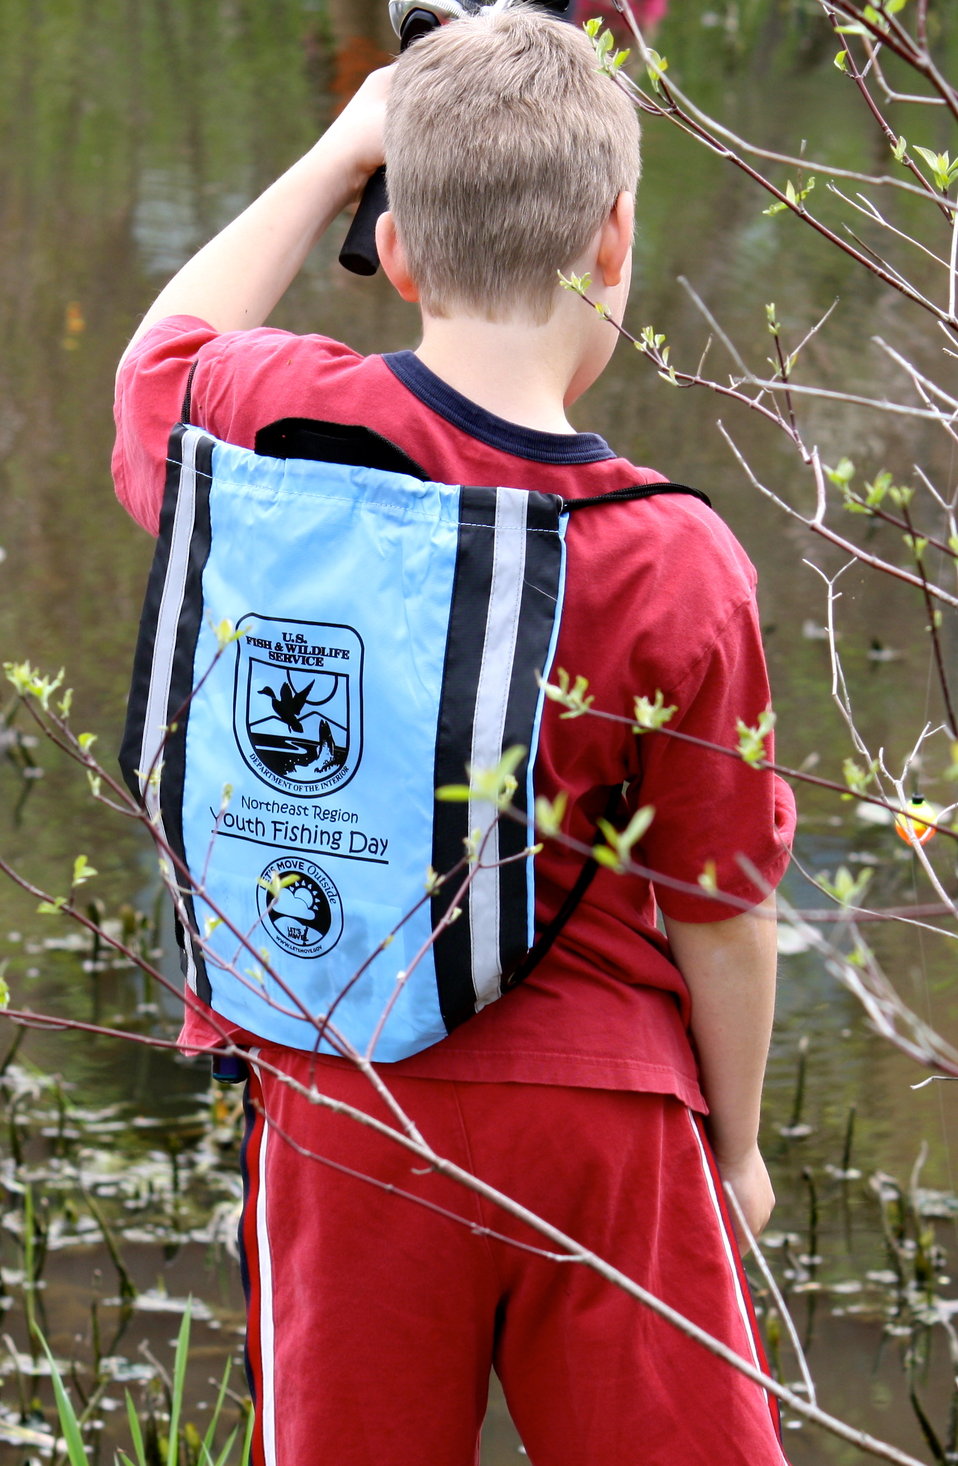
Boy Fishing

Fishing Derby held at the USFWS regional office in Hadley, MA on May 7, 2011.